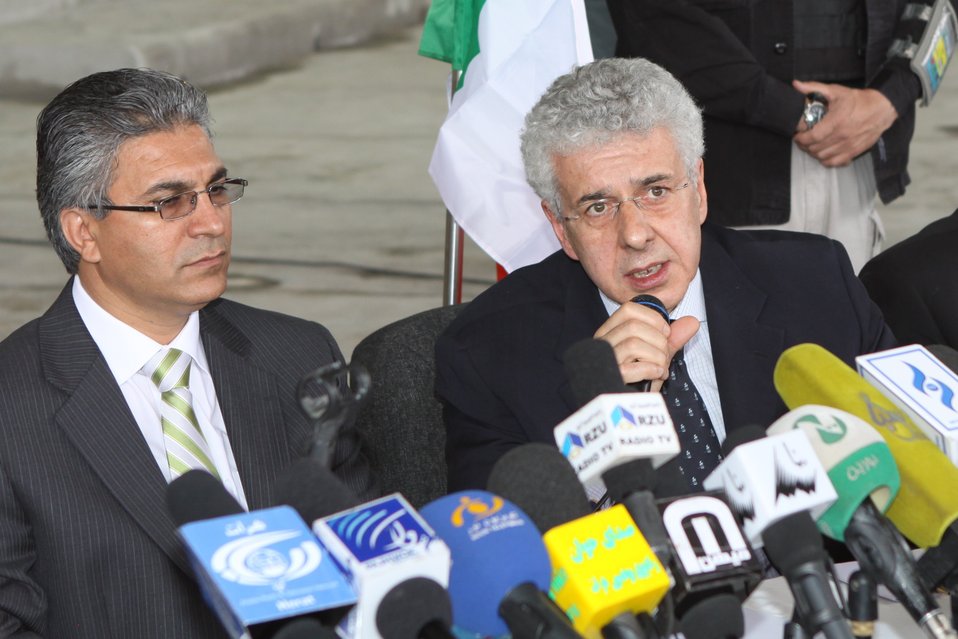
100525 Hirat Marble Conference 355